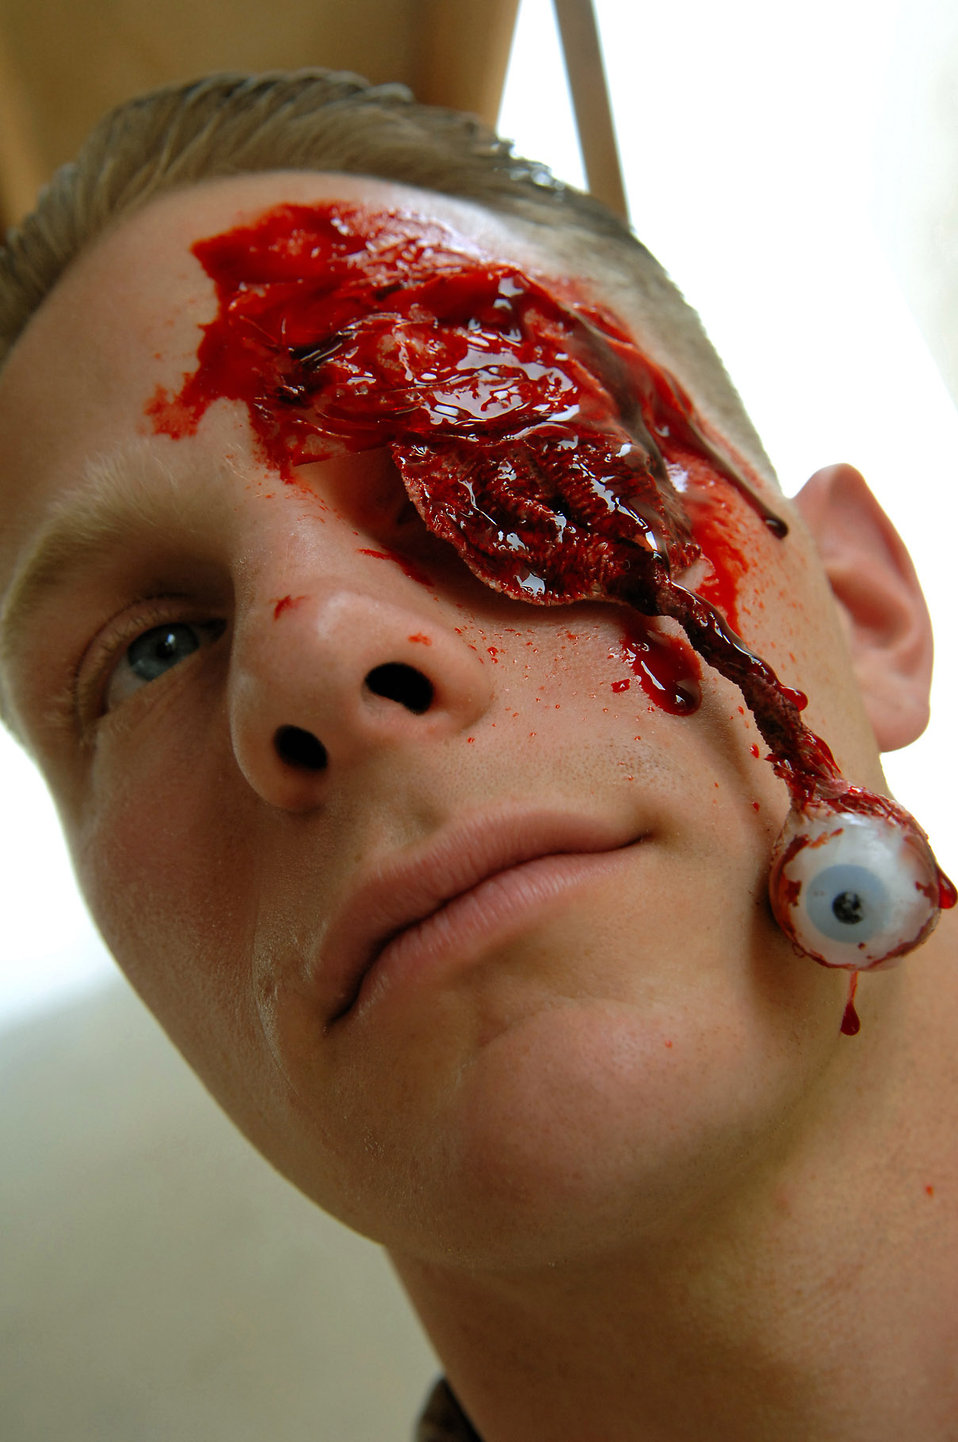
That looks like it hurts

Army Sgt. Joshua Martin wears moulage to simulate an eye injury March 31 at Balad Air Base, Iraq. Nearly 50 servicemembers were moulaged at Jamison Medical Training Center with injuries ranging from small burns to extensive head wounds and even lost limbs in order to add an element of realism to a mass casualty battle drill. Sergeant Martin is a 403rd Inland Cargo Transition Company cargo specialist deployed from Fort Bragg, N.C.